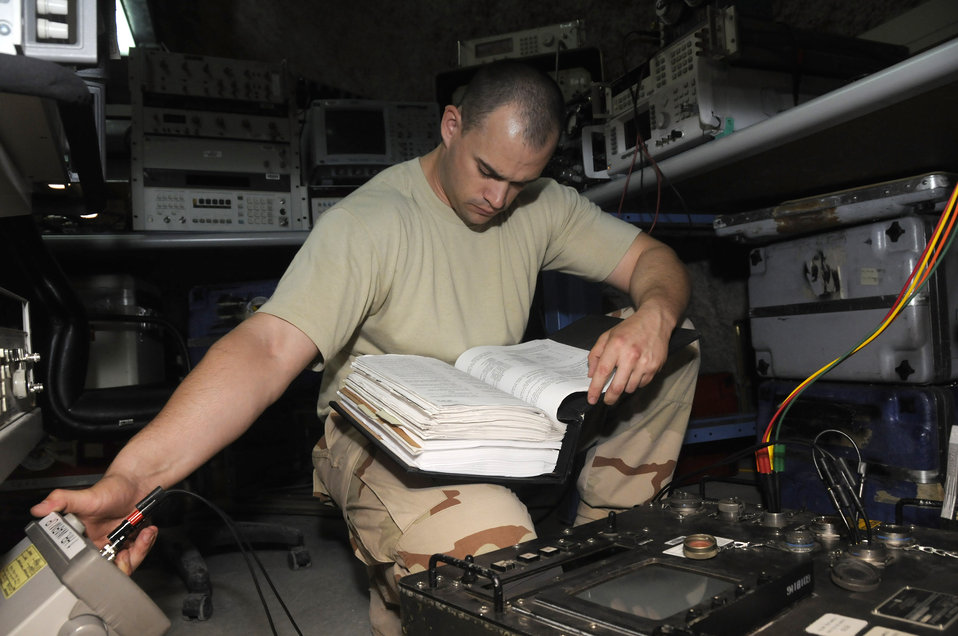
PMEL Airmen deliver precision to warfighters

Tech. Sgt. Kevin Clyde calibrates a guided missile test set Aug. 4. Sergeant Clyde is with the 379th Expeditionary Maintenance Squadron's Precision Measurement Equipment Laboratory at an air base in Southwest Asia. He is deployed from Travis Air Force Base, Calif.